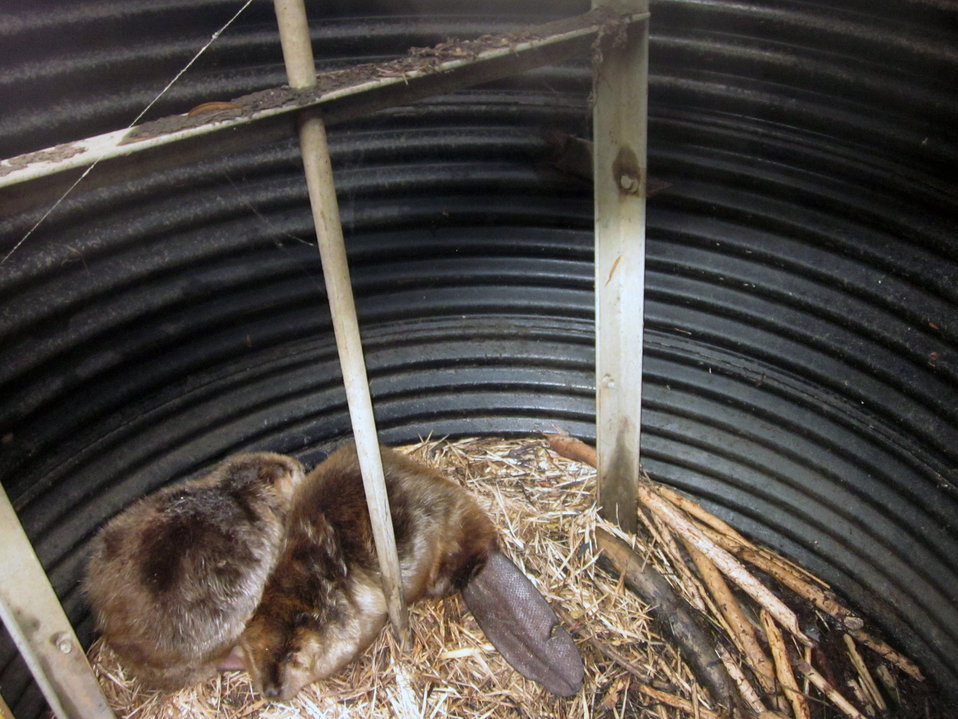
Beaver nap

These beavers were found taking a nap in a water control structure at Two Rivers National Wildlife Refuge in Illinois!